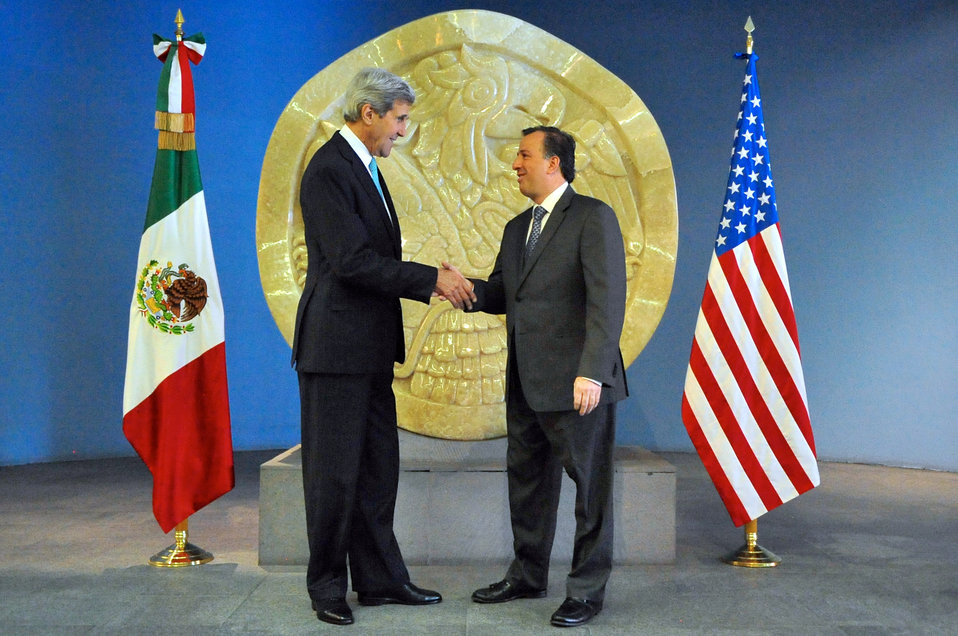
Secretary Kerry, Mexican Foreign Secretary Meade Pose Before Meeting in Mexico City

U.S. Secretary of State John Kerry and Mexican Foreign Secretary José Antonio Meade shake hands before their meeting in Mexico City, Mexico, on May 21, 2014.